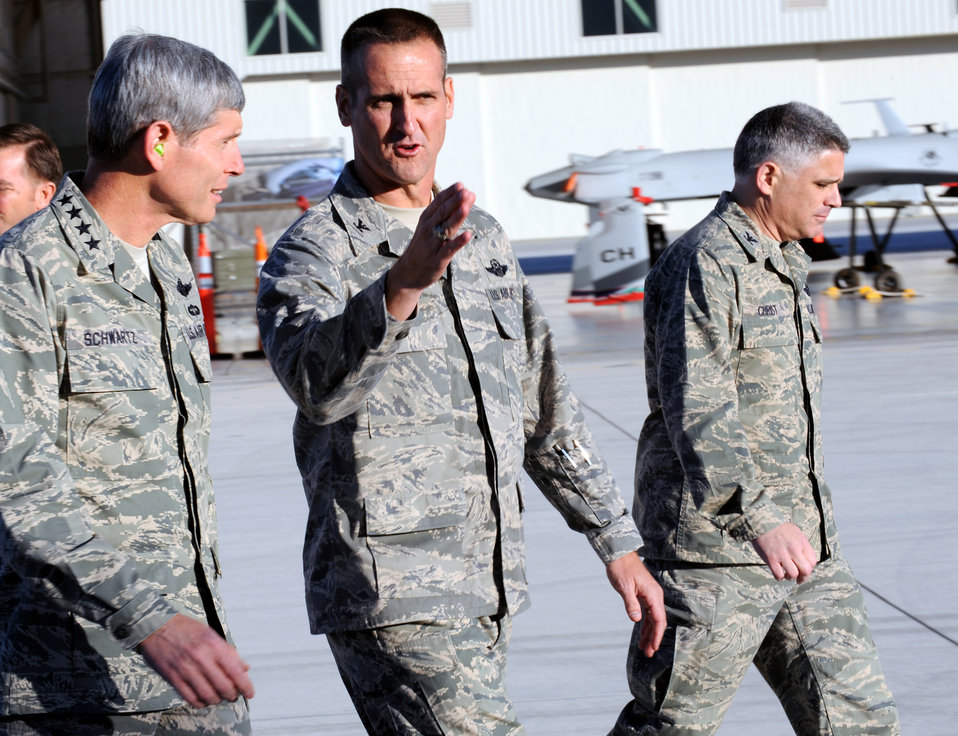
Unmanned aircraft crews strive to support warfighters

Air Force Chief of Staff Gen. Norton Schwartz, left, walks with Col. Peter Gersten, commander of the 432nd Wing, during a visit to Creech Air Force Base, Nev., the home of the Air Force's first unmanned aircraft systems wing.